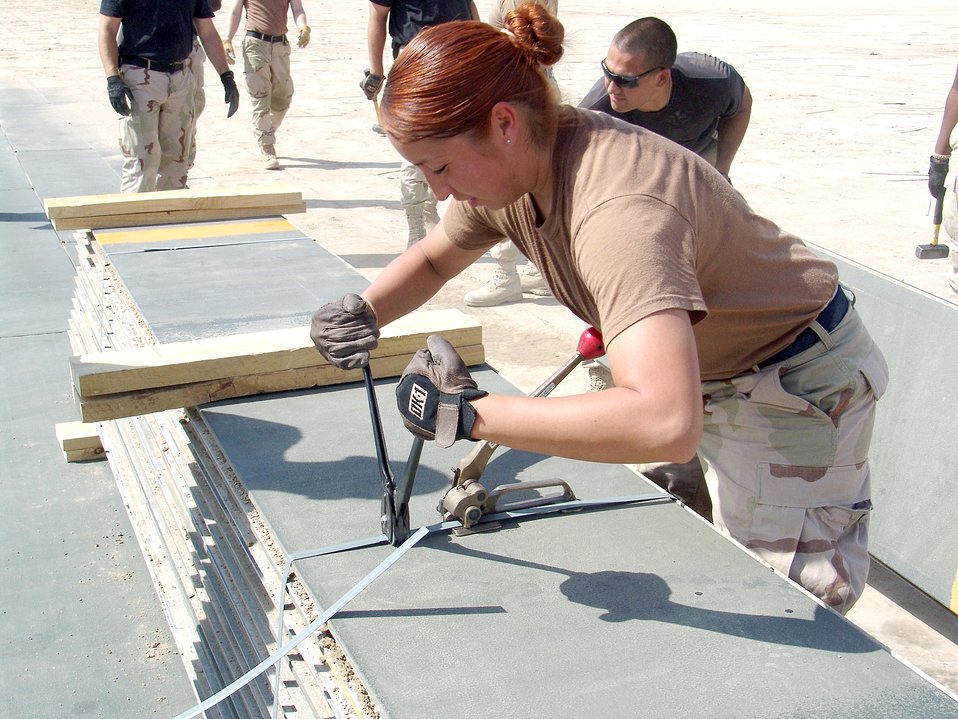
Bundle up

SOUTHWEST ASIA -- Airman 1st Class Victoria Vargas crimps metal bonds together to bundle metal planks that had served as the temporary flightline surface in preparation for paving the ramp area at a forward-deployed location. Airman Vargas is assigned to the 386th Expeditionary Civil Engineer Squadron and is deployed from Misawa Air Base, Japan.